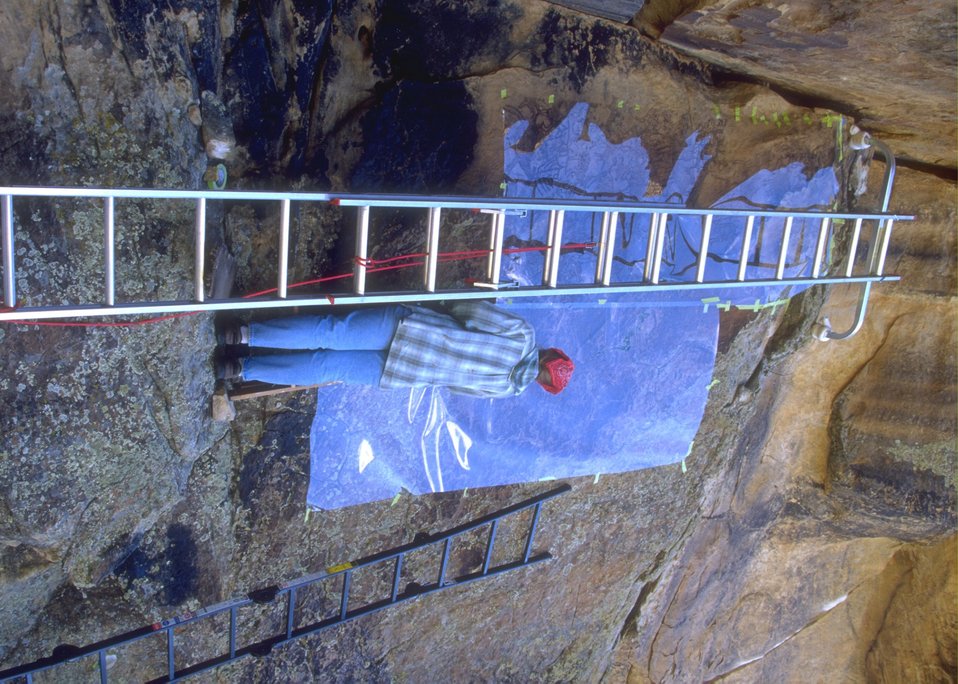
Mapping a petroglyph panel in Whoopup Canyon, Newcastle Field Office.